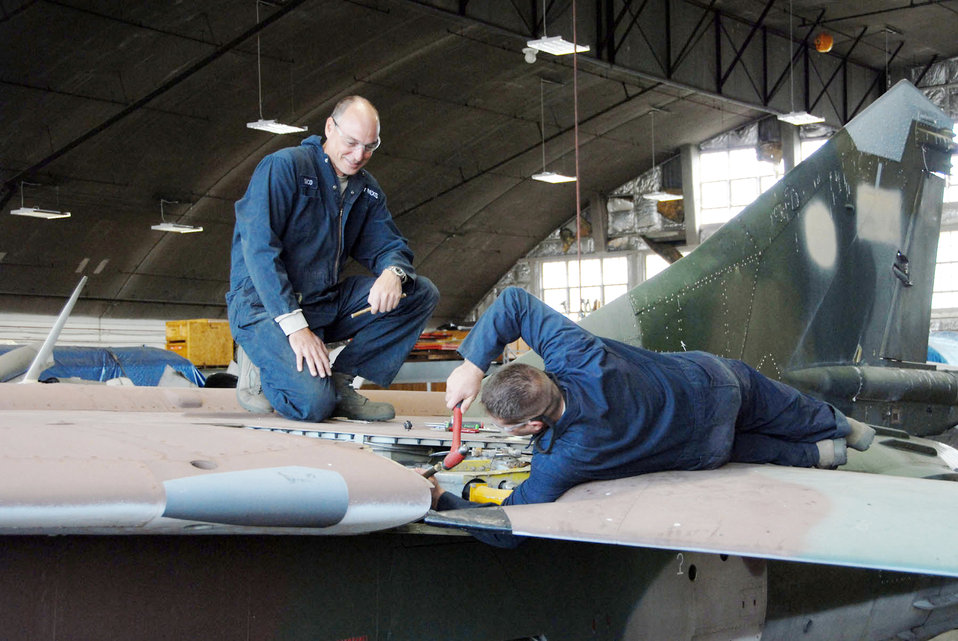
Museum restoration

Reservists with the 315th Maintenance Squadron from Charleston Air Force Base, S.C., work to remove a wing from a MiG-23 during their two-week stay at Wright-Patterson Air Force Base, Ohio, where the group worked in the restoration hangar at the National Museum of the U.S. Air Force in nearby Dayton.